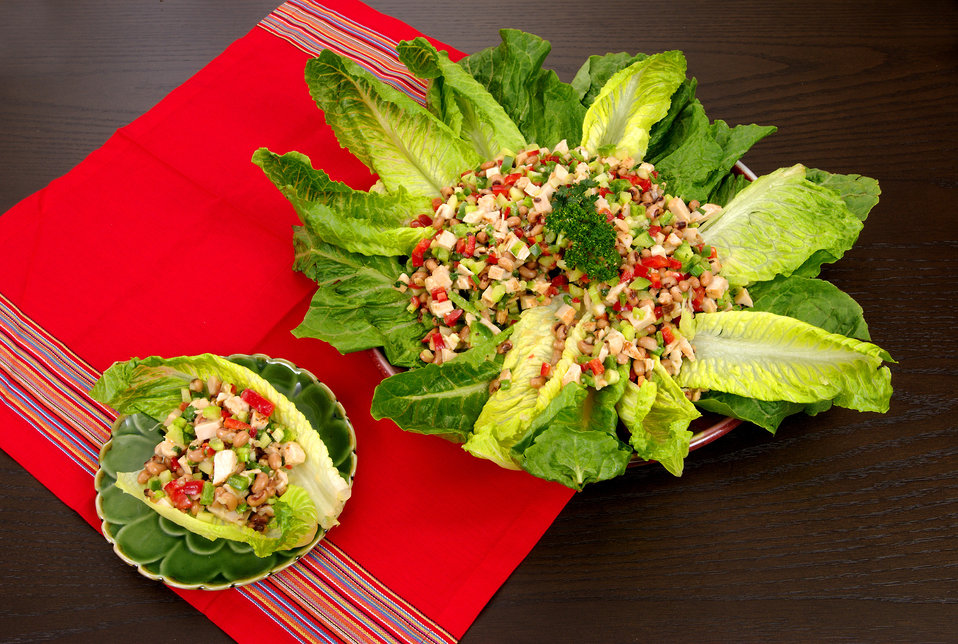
This image depicts a delicious-looking black-eyed bean salad set atop a circle of romaine lettuce leaves. The salad included green and red peppers, scallions, chopped garlic, cubed white-meat chicken, and olive oil. Note the single serving size on a separate plate.